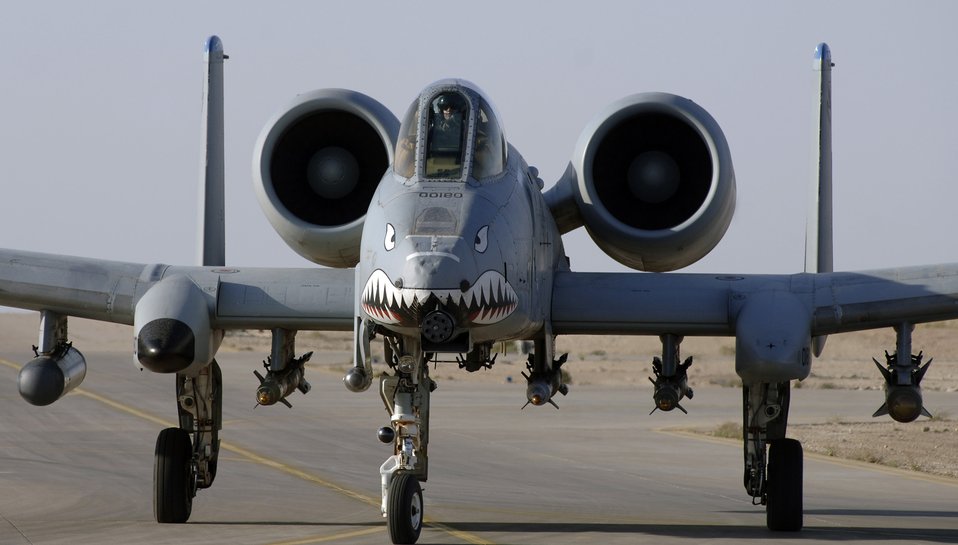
Aug. 13 airpower summary:

A-10 Thunderbolt IIs provide close-air support to ground troops in Afghanistan and Iraq. The A-10's excellent maneuverability at low air speeds and altitude and its highly accurate weapons delivery make it an ideal aircraft for supporting coalition operations.